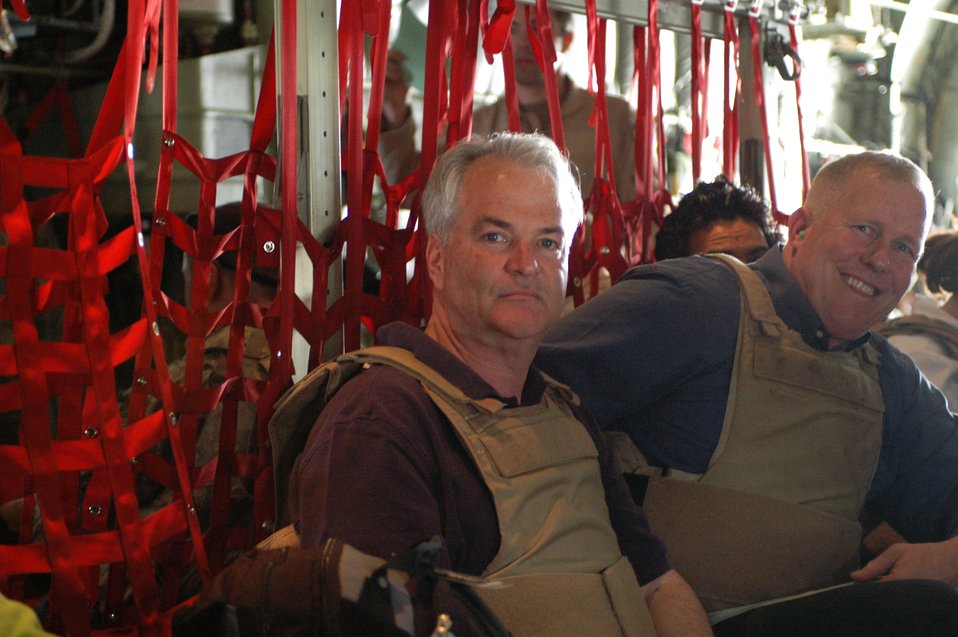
CODEL Berman